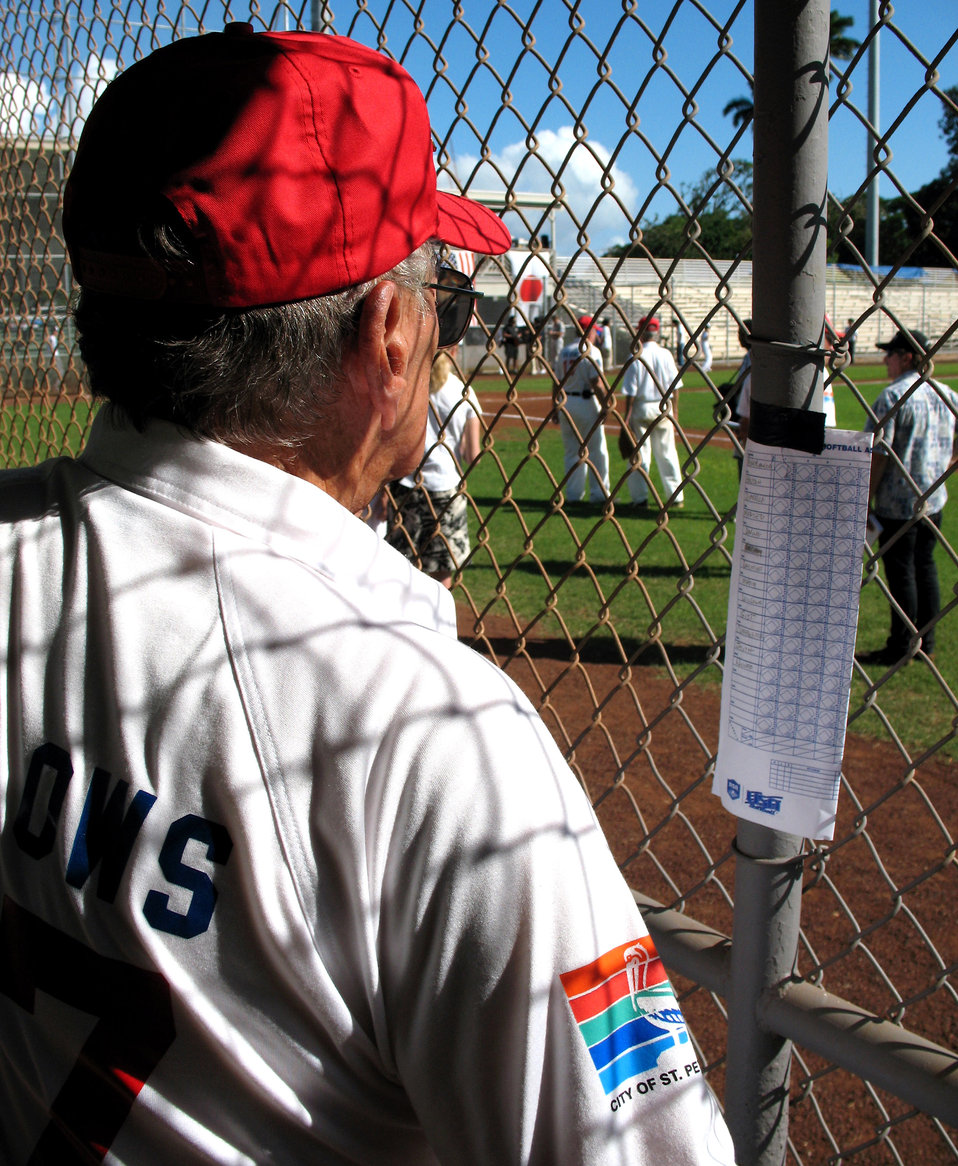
Time, and softball, heal old wounds

81-year-old Larry Willows of the Kids & Kubs senior softball team from St. Petersburg, Fla., watches the action on the field during a game with the Over the Rainbows senior softball team from Japan Dec. 19 at Hans L'Orange Park in Waipahu, Hawaii. The two teams, comprising WWII veterans, met here to make peace with the past and play this historic game. The Kids & Kubs won the game 14-2.